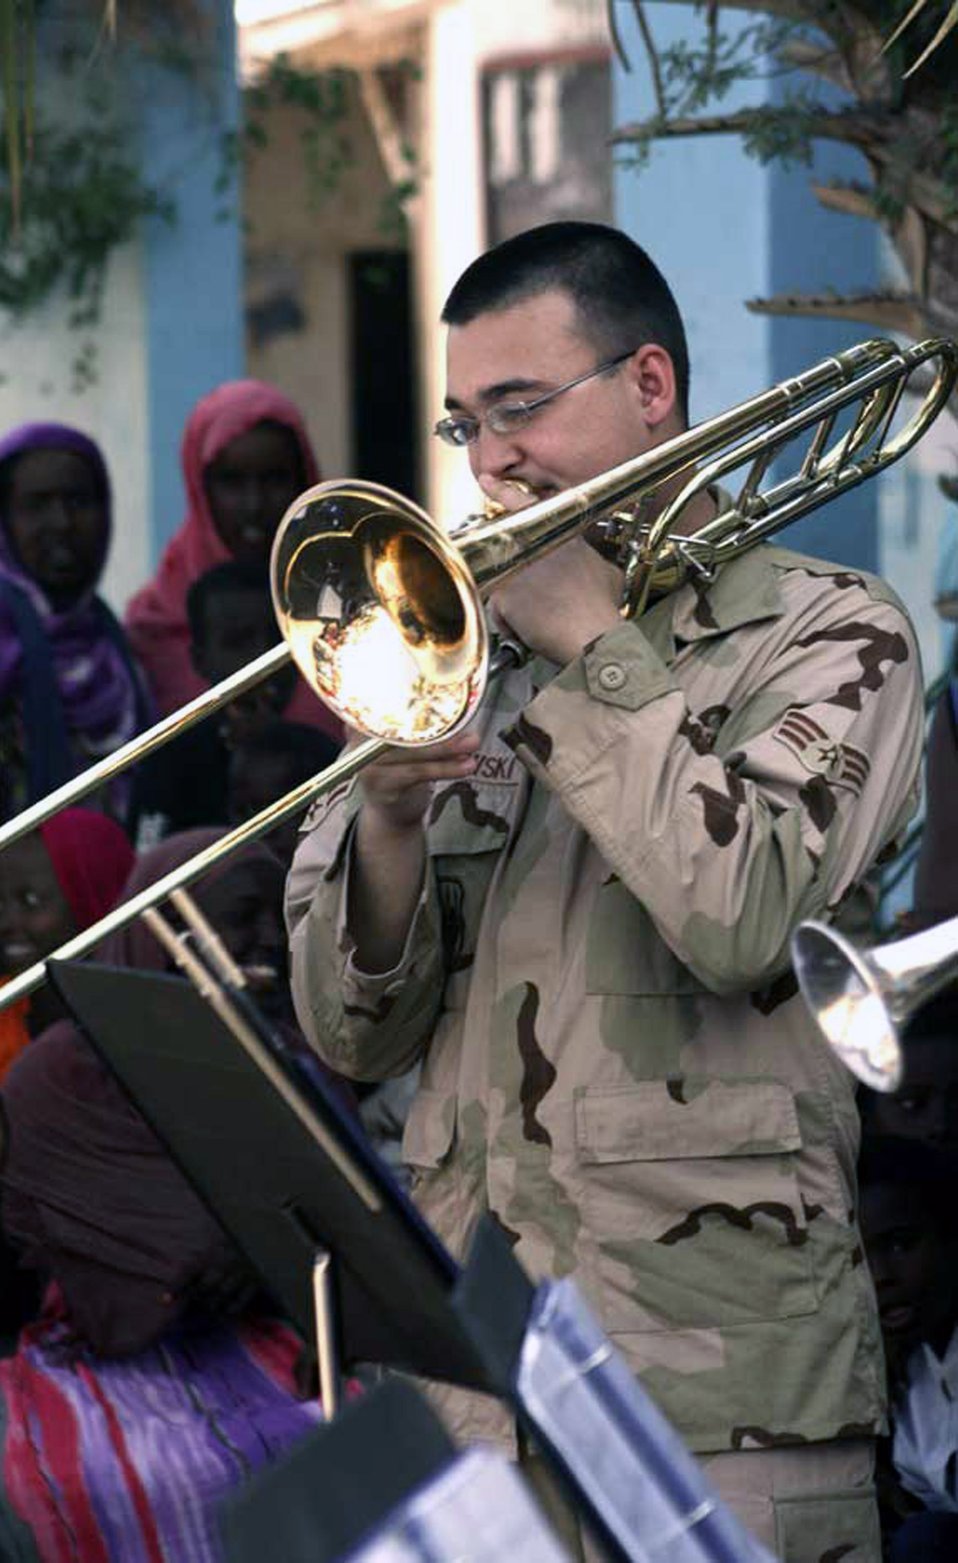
Djiboutians delight in the sounds of

Senior Airman Kaz Kruszewski, a member of the United States Central Command Air Forces Expeditionary Band